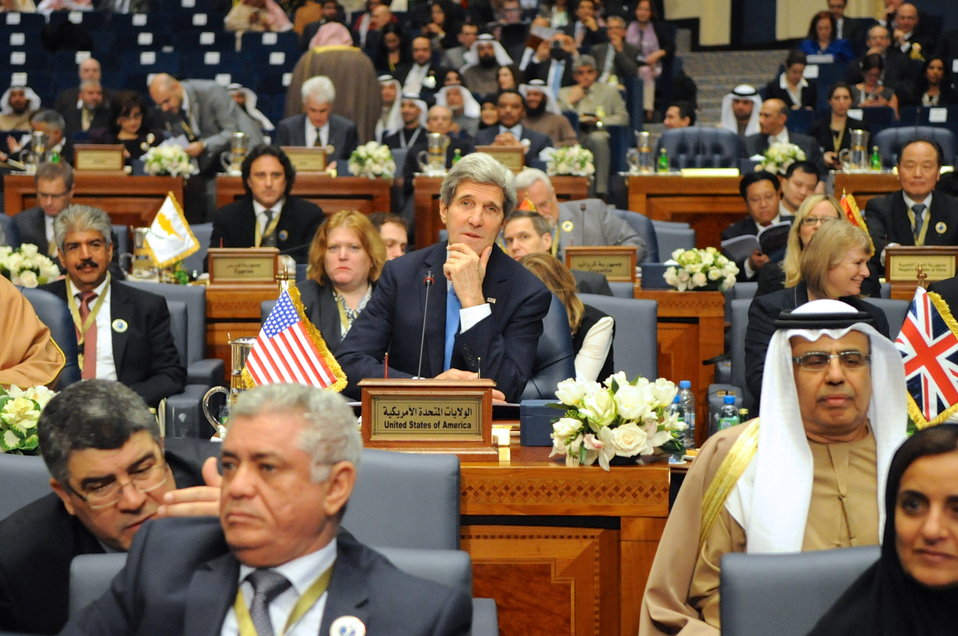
Secretary Kerry Listens at Outset of Syrian Donors' Conference

U.S. Secretary of State John Kerry listens at the outset of the Syrian Donors' Conference in Kuwait City , Kuwait, on January 15, 2014, which Amir Sheikh Sabah al-Ahmed Al Sabah of Kuwait kicked off with a pledge of $500 million.